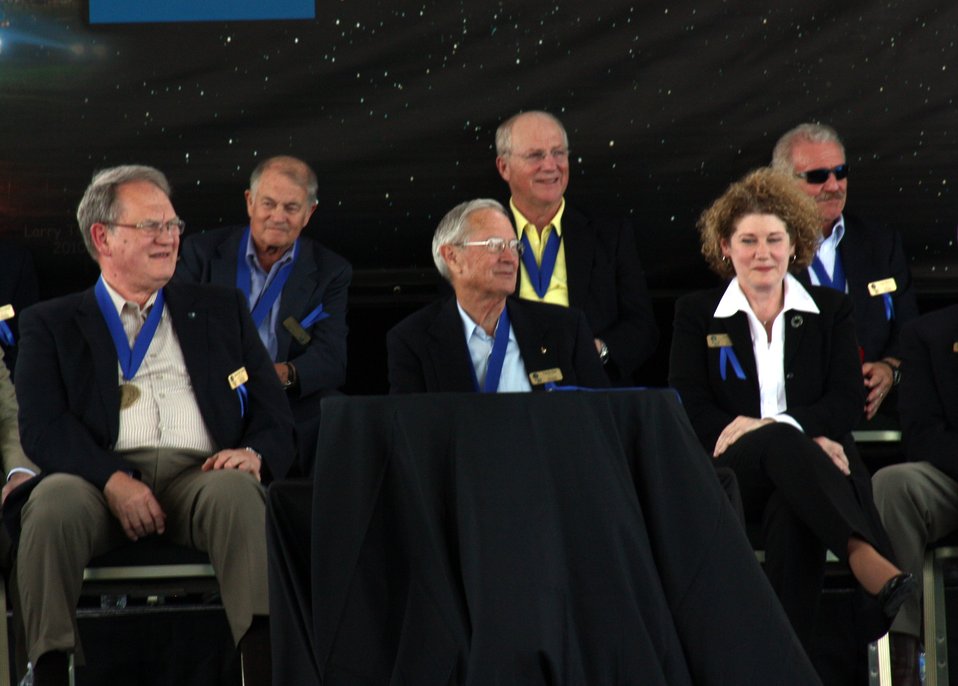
Two Air Force officers inducted into U.S. Astronaut Hall of Fame

Retired Col. Karol Bobko (left) and Lt. Gen. Susan Helms (right) sit among fellow members of the U.S. Astronaut Hall of Fame May 14, 2011, at Kennedy Space Center, Fla. General Helms is the 14th Air Force commander.